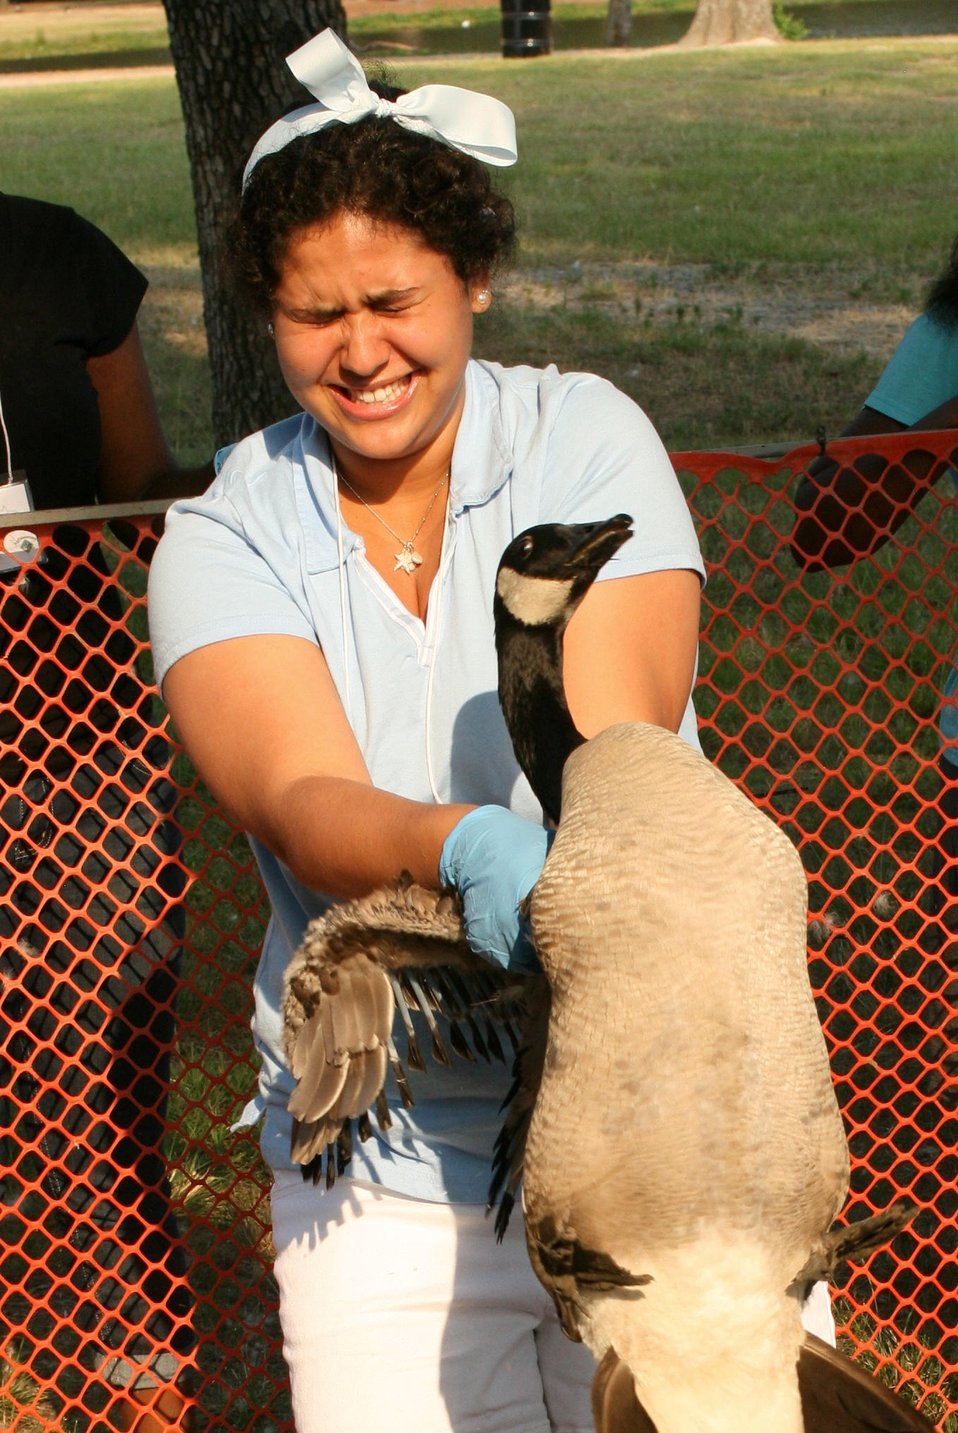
Students registered in the U.S. Department of Agriculture’s (USDA) Animal and Plant Health Inspection Service (APHIS) Ag-Discovery at the University of Arkansas Pine Bluffs, AR assist in capturing resident Canada Geese near the university in a session led by USDA’s Wildlife Services and personnel from the Arkansas Game and Fish Commission on July 30, 2012. The geese are corralled and students observe sample collection techniques for disease surveillance and assist in banding the birds before release.